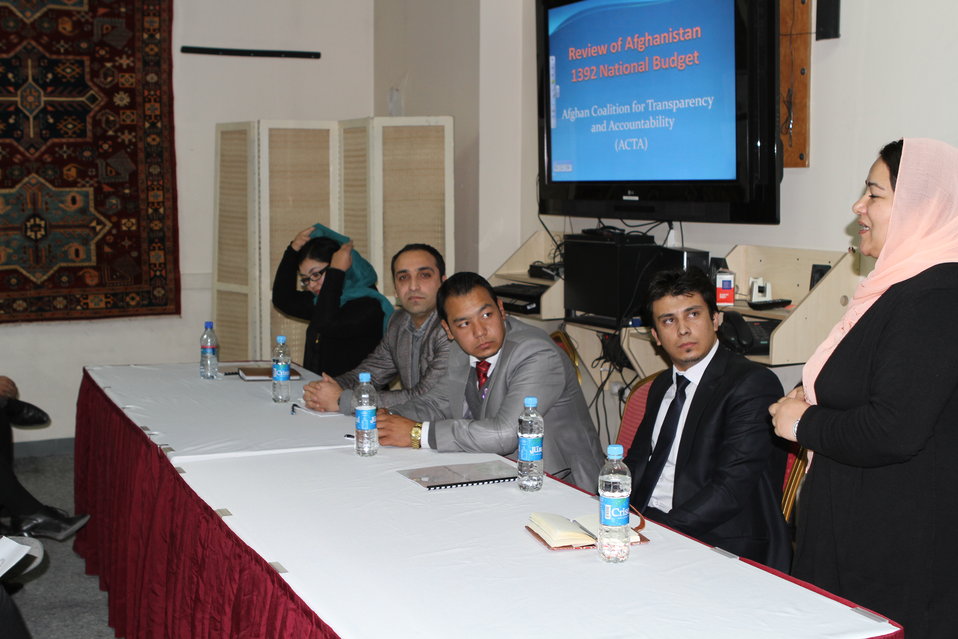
Presentation of the ACTA Civil Society analysis of the FY 1392 Afghan national budget